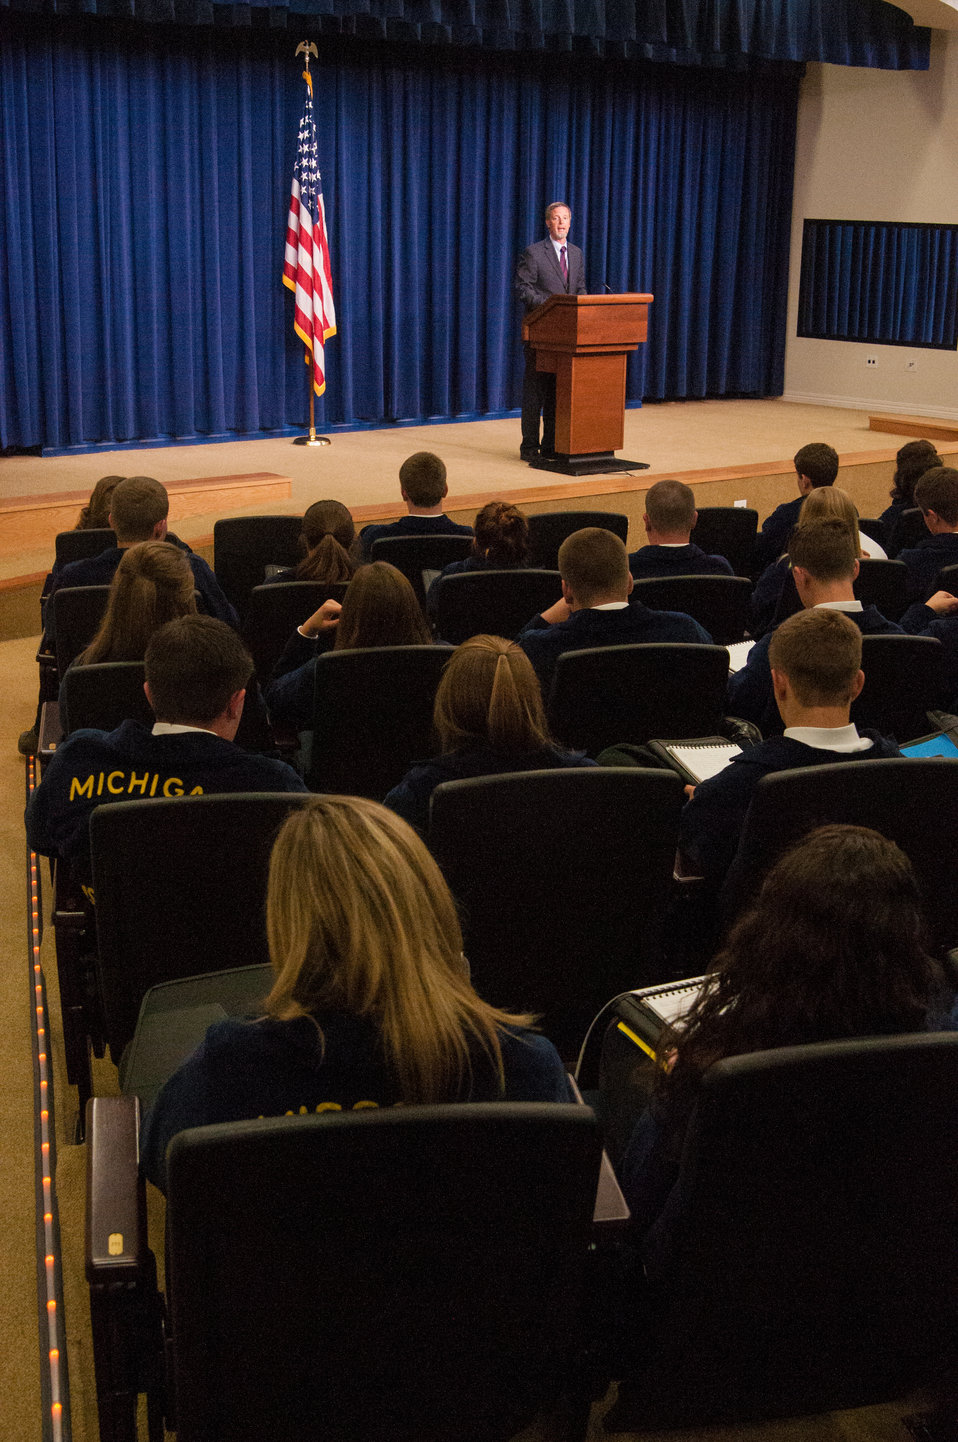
White House Domestic Policy Council Senior Policy Advisor for Rural Affairs Doug McKalip speaks at a meeting of the White House Rural Council to an audience of the State President’s Conference of the FFA on Wednesday, Jul. 24, 2013 in Washington, D.C. McKalip discussed White House Initiatives for rural America and thanked the FFA National Presidents for their efforts.